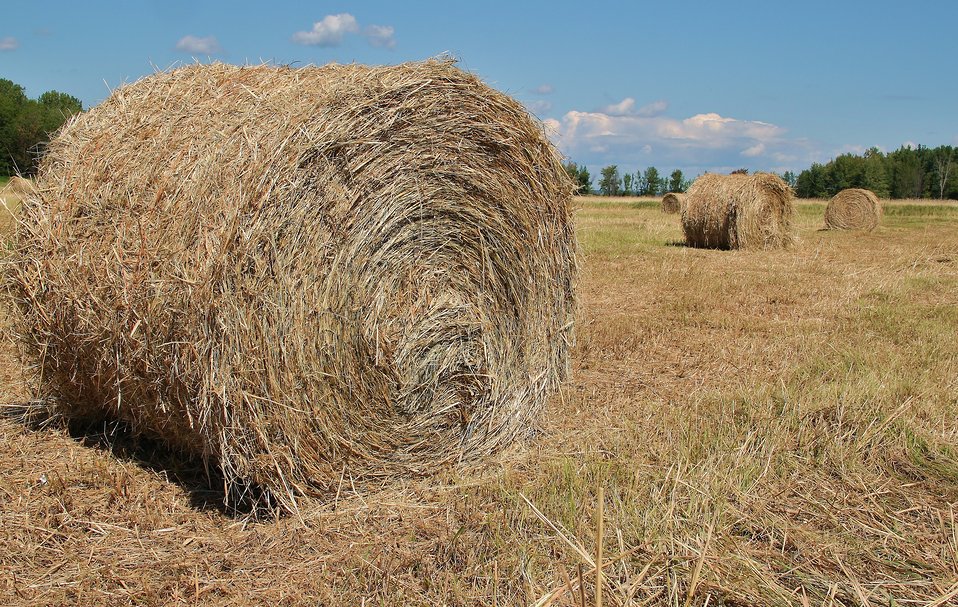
Missisquoi National Wildlife Refuge Haying Grassland Habitat

Grassland management at Missisquoi NWR